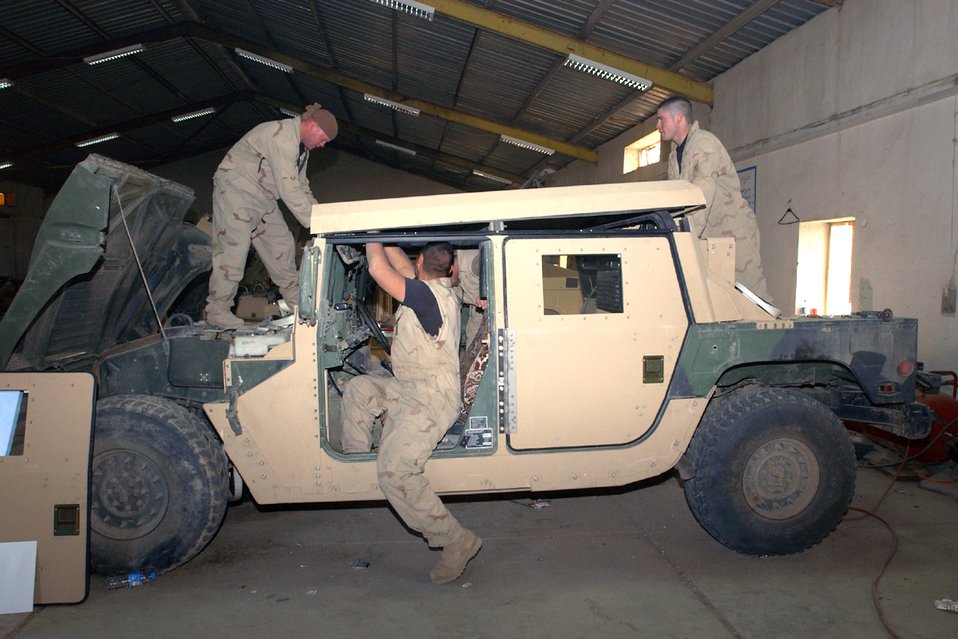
Armoring up

KIRKUK AIR BASE, Iraq -- Staff Sgt. Matt Sornberger (from left) and Senior Airmen Adam Gozdziewicz and Juan Hurtado fit a new armored roof to a Humvee here. The Airmen are part of a U.S. Central Command Air Forces "up armor" team sent to Iraq to install protective armor on Humvees for the 506th Expeditionary Security Forces Squadron here. The Airmen are assigned to the 506th Expeditionary Logistics Readiness Squadron.